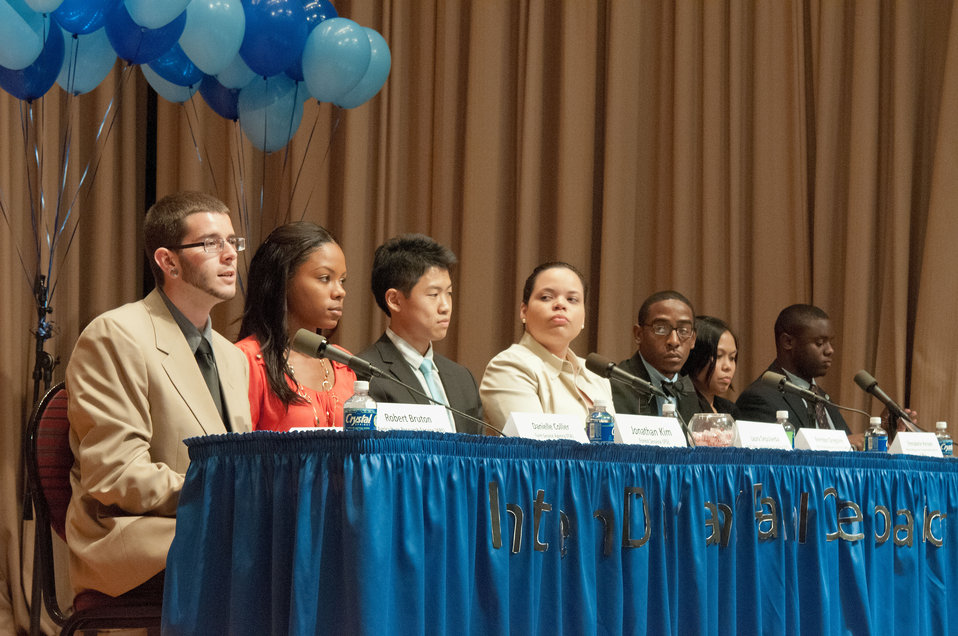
From left: Robert Bruton, Danielle Collier, Jonathan Kim, Laura Sepulveda, Brendan Gregorie, Emmabelle Kenyon and Joshua Crockett explained their experience working as interns during the United States Department of Agriculture (USDA) Intern Day and Panel Discussion, “Transforming USDA’S Tomorrow Today” in Washington, DC, on Wednesday, July 11, 2012.